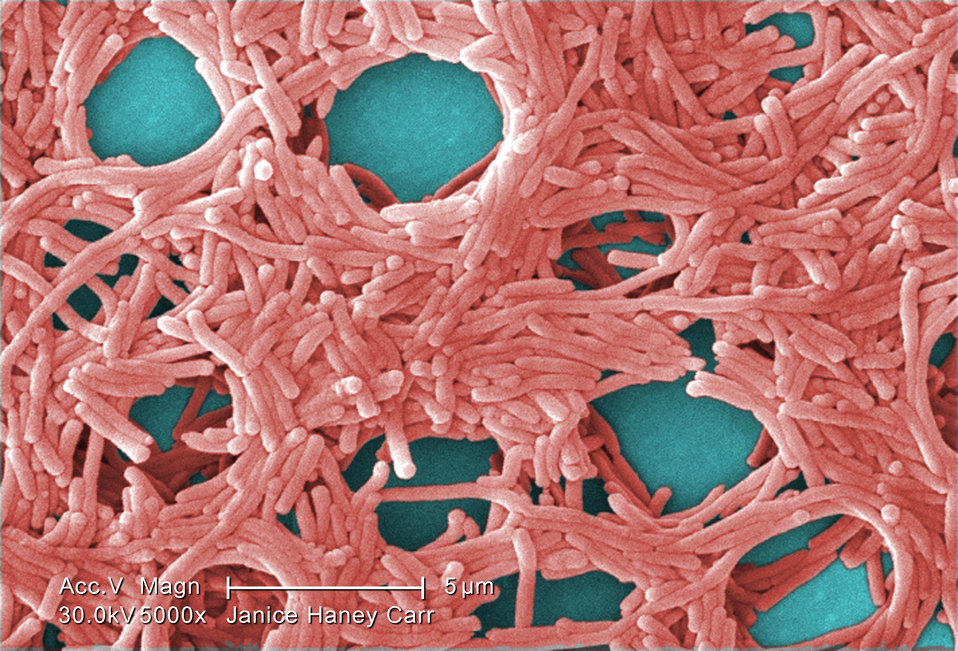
Under a moderately-high magnification of 5000X, this colorized scanning electron micrograph (SEM) depicted a large grouping of Gram-negative Legionella pneumophila bacteria. Please see PHIL 11092 through 11154 for additional SEMs of these organisms, specifically PHIL 11147 for a black and white version of this image. Of particular importance, is the presence of polar flagella, and pili, or long streamers, which due to their fragile nature, in some of these views seem to be dissociated from any of the bacteria.